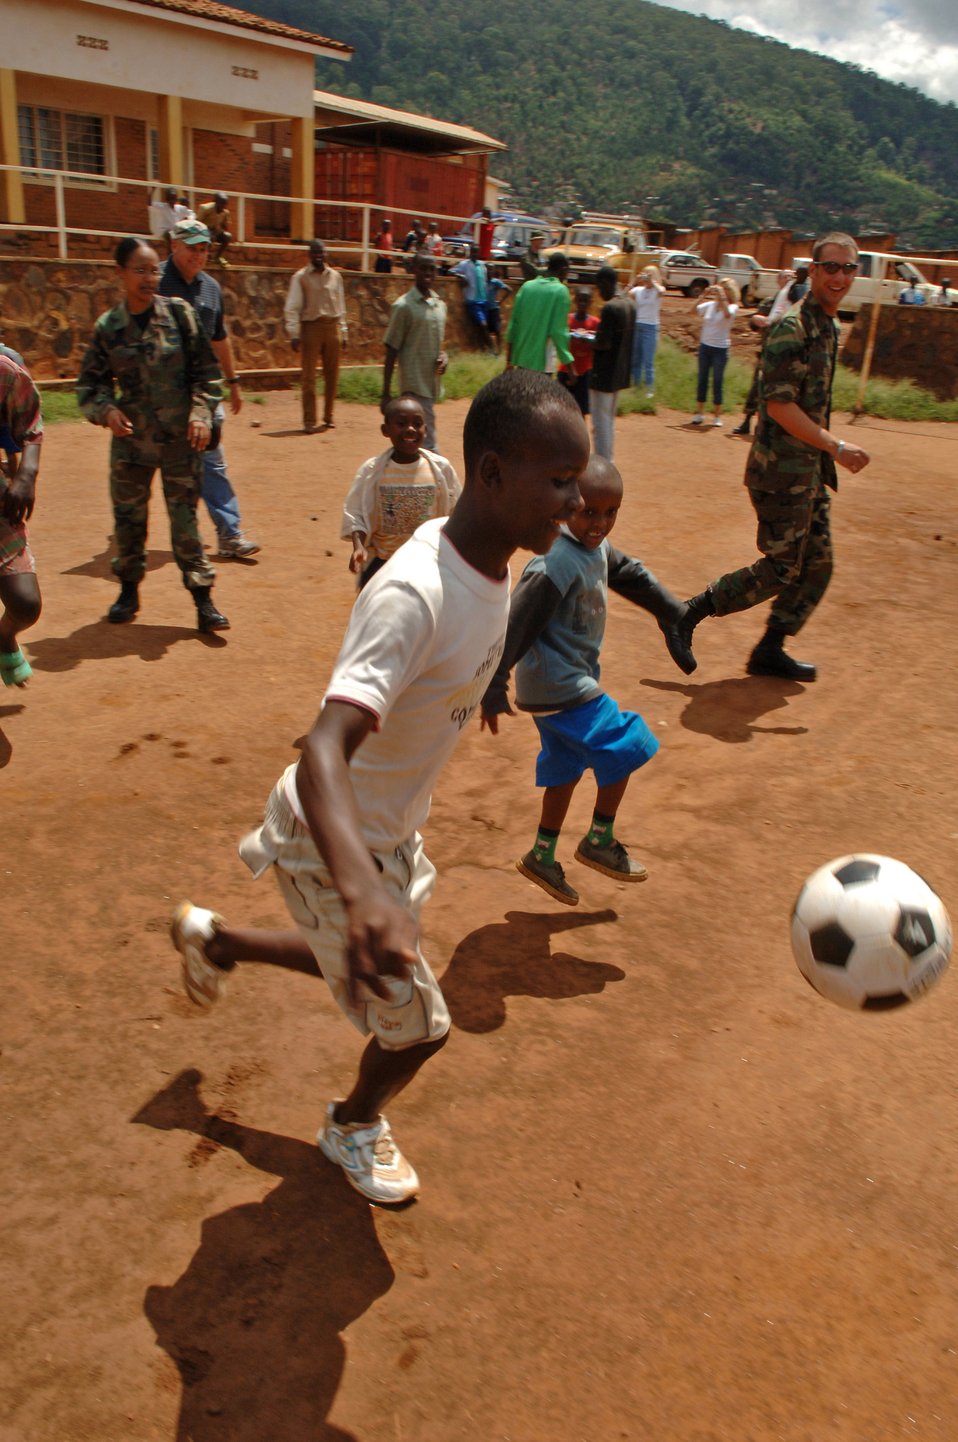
He shoots, he scores

Airmen and contractors from Ramstein Air Base, Germany, in Rwanda to support NATO's peacekeeping efforts in the Darfur region of Sudan, play soccer with children from the Gisimba Orphanage in Kigali, Rwanda.